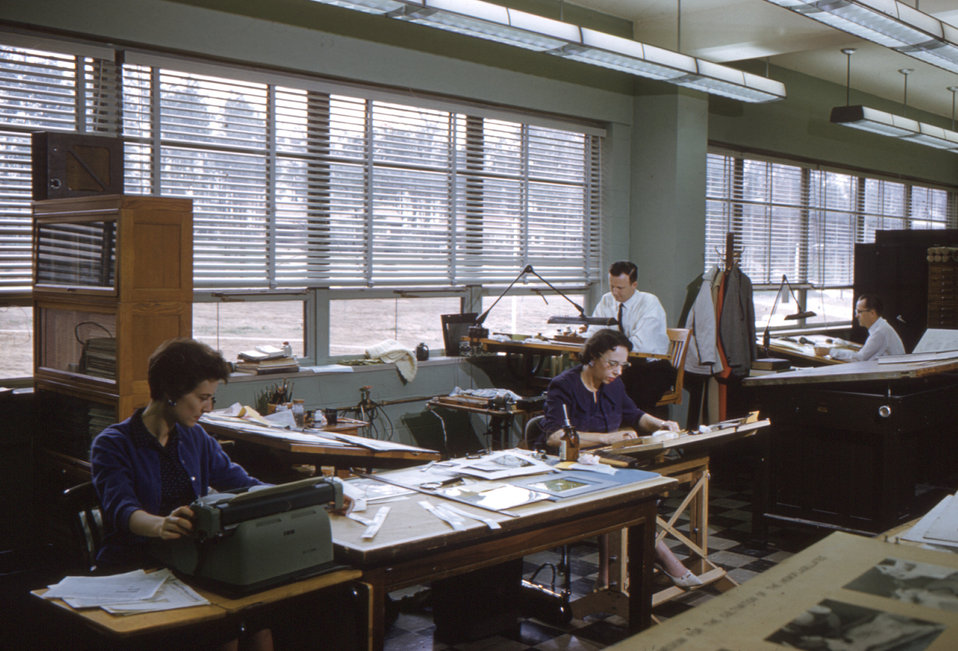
This 1961 photograph shows a number of CDC personnel at work in the Graphic Arts Office.